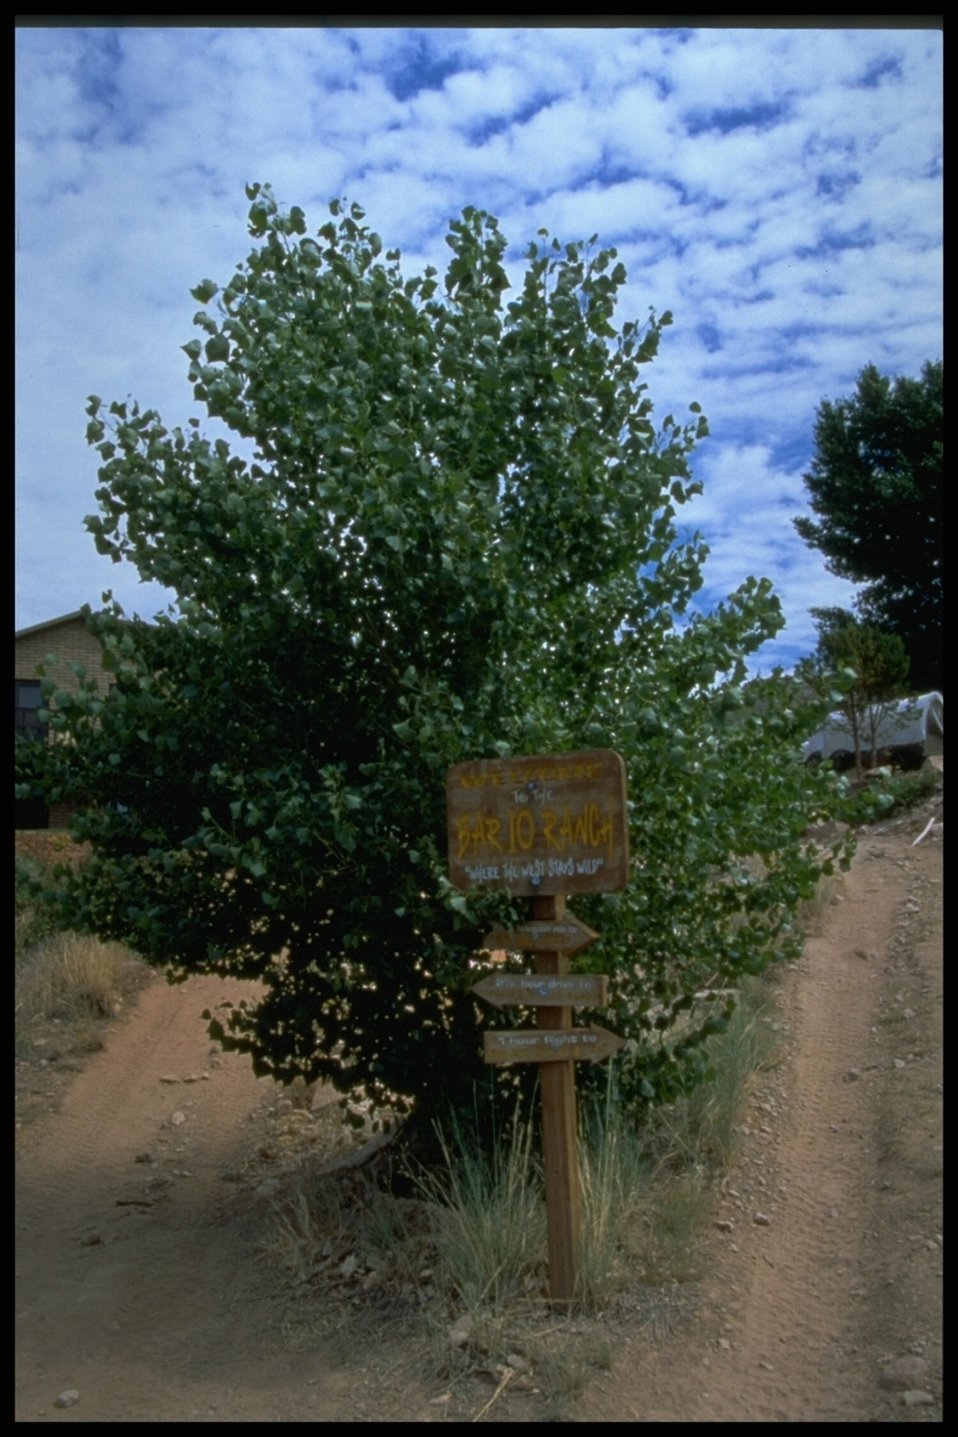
A small sign in front of a tree shows the way in the Grand Canyon-Parashant National Monument area.